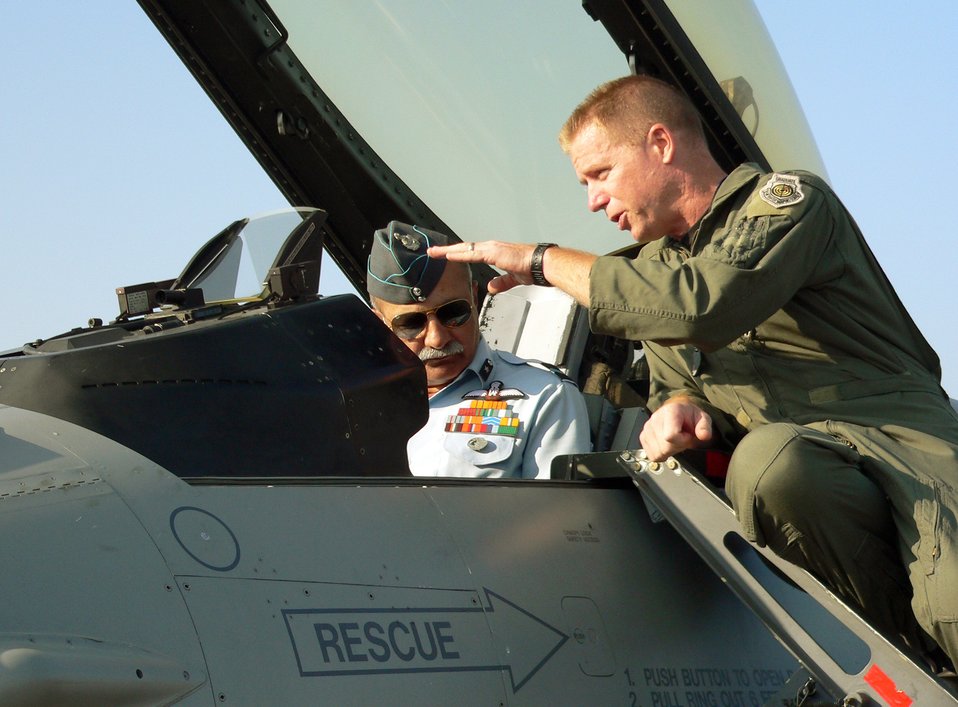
Cope India

KALAIKUNDA AIR STATION, India (AFPN) -- Indian air force Gen. B.C. Nanjapa gets a bird's eye view sitting in the cockpit of an F-16 Fighting Falcon, as he and Col. Rusty Cabot discuss the fighter's capabilities. A dozen F-16s from Misawa Air Base, Japan, are here with about 250 U.S. Airmen from five Pacific bases participating in exercise Cope India 06. The exercise aims to strengthen ties and promote interoperability between the two countries' air forces. Colonel Cabot is the deployed forces commander here.